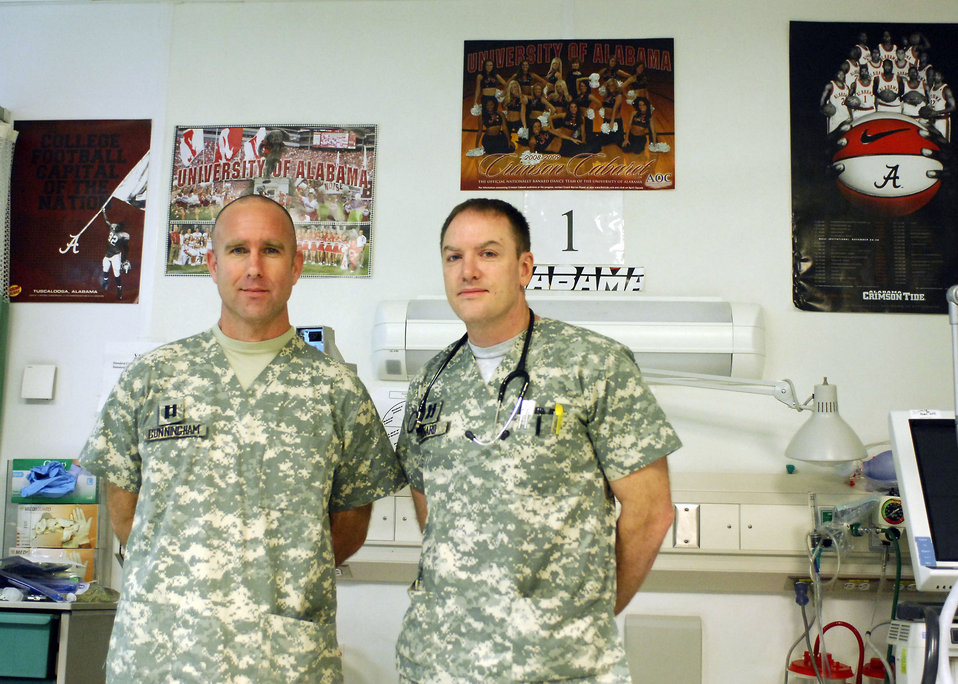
NCAA football lifts morale for doctors, wounded troops

Capts. Frank Cunningham and Matt Howard stand next to Trauma Bay No. 1, named in honor of the University of Alabama Dec. 12, 2009 at the Craig Joint Theater Hospital at Bagram Airfield, Afghanistan. Many NCAA teams, especially those from the Southeastern Conference sent memorabilia to the Craig Joint Theater Hospital to brighten the spirits of the wounded servicemembers and staff.